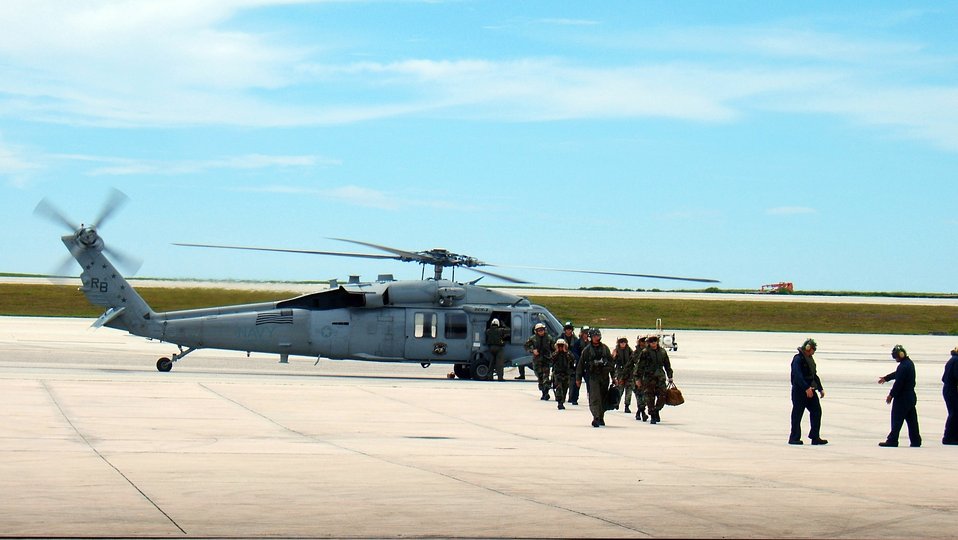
Andersen members return from USNS Mercy mission

Members from the 36th Medical Group, 36th Wing and the U.S. Navy Helicopter Sea Combat Squadron 25 return to Andersen Air Force Base, Guam, Sept. 10 following a 72-day humanitarian and civic assistance deployment on the USNS Mercy.